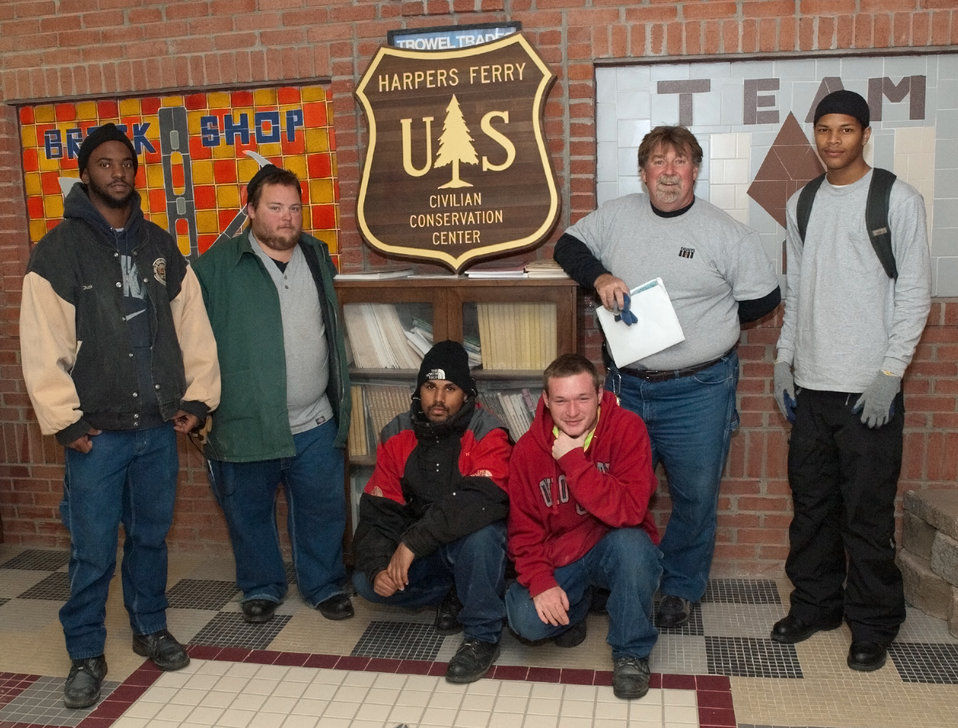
(L to R) Students Willie Thompson, Ben Stinhcomb, Carlton Peters, Christopher Fair, instructor Chuck Driscoll and student Steven Pierce at the Job Civilian Conservation Corp Center (JCCCC) in Harpers Ferry, WV on Nov. 8, 2012. The U.S. Forest Service manages 28 Job Corps Civilian Conservation Centers.